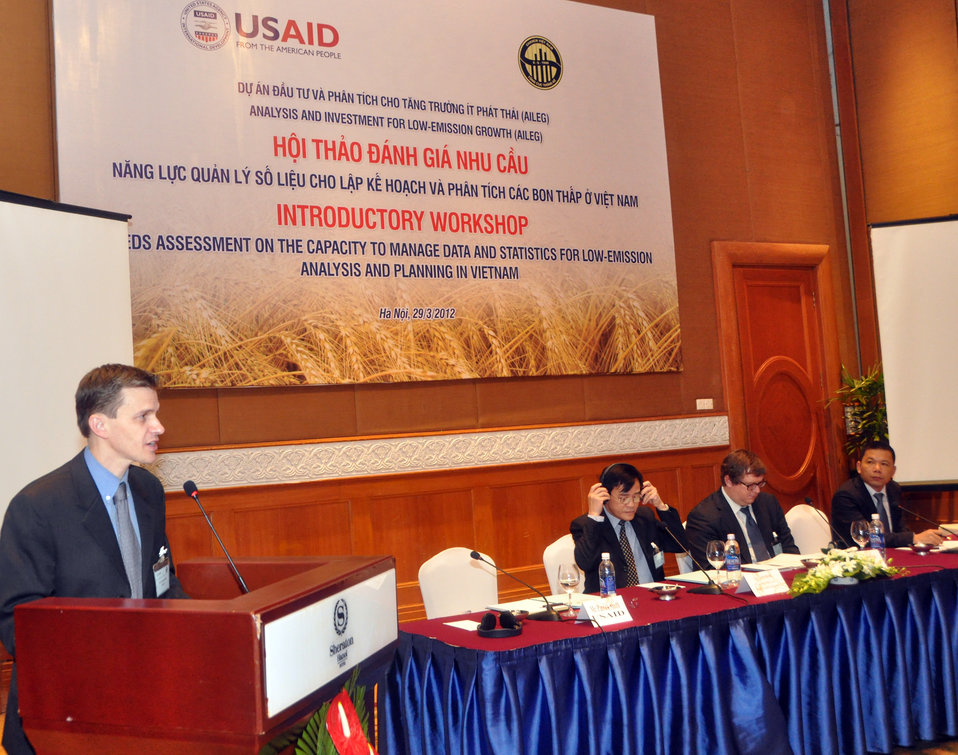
Patrick Smith, USAID/Vietnam Climate Change Advisor